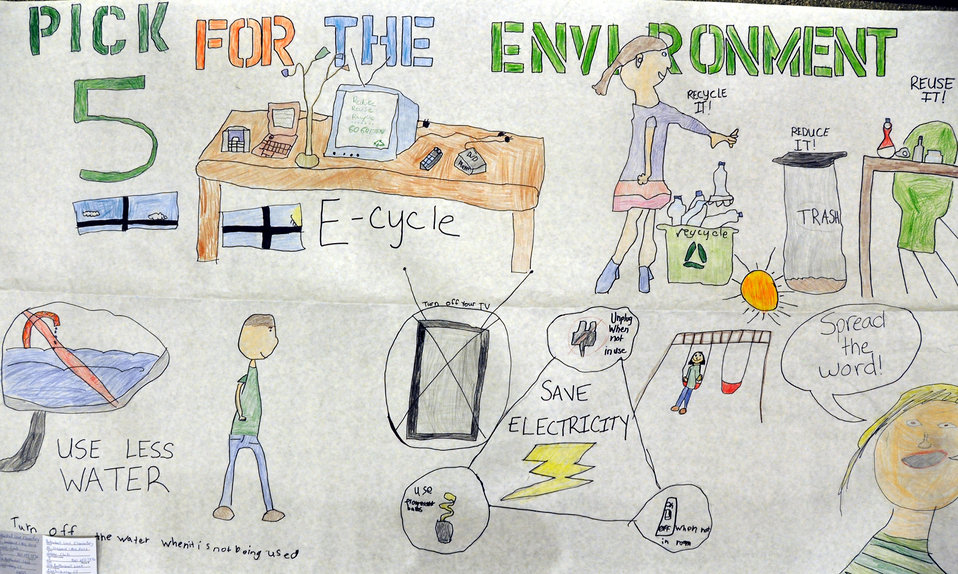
Green Club, Grade 3, Connecticut